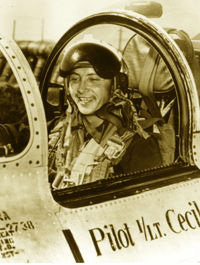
51st Fighter Wing Aces

Capt. Cecil G. Foster became the seventh ace of the wing on Nov. 22, 1952. Capt. Foster was assigned to the 16th Fighter-Interceptor Squadron.